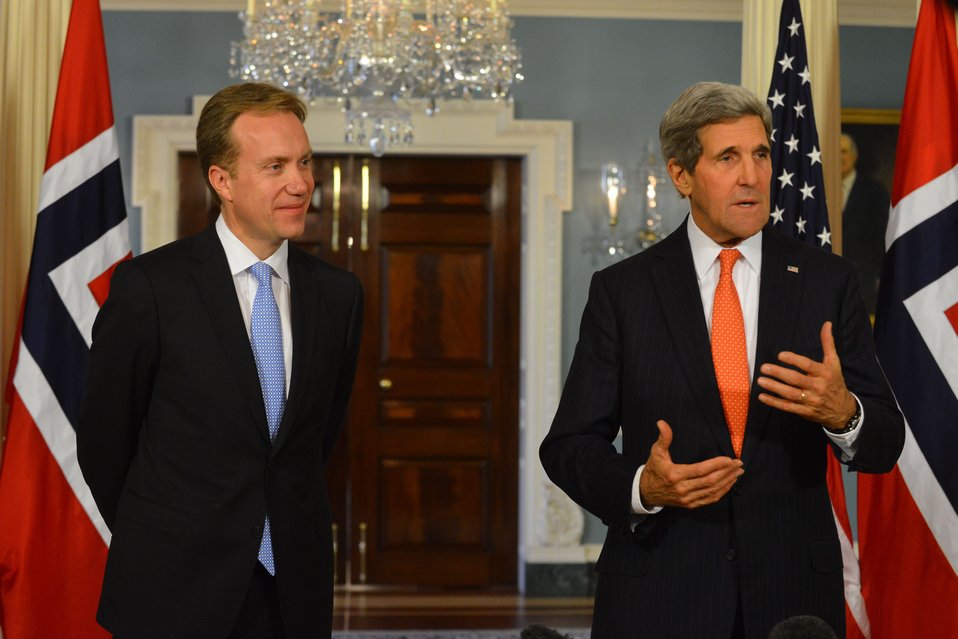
Secretary Kerry and Norwegian Foreign Minister Brende Address Reporters

U.S. Secretary of State John Kerry and Norwegian Foreign Minister Borge Brende address reporters at the U.S. Department of State in Washington, D.C., on November 15, 2013.